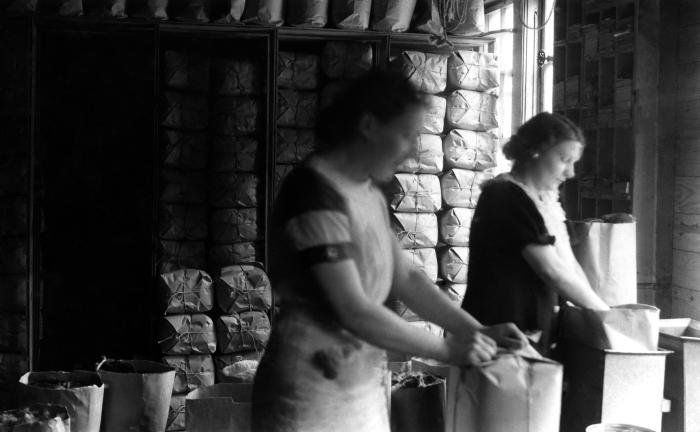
This historical image was provided by the Center for Disease Control's (CDC), National Institute for Occupational Safety and Health (NIOSH). Published in 1937, this photograph depicted two women in a Connecticut animal fur processing establishment who were placing processed fur into paper bags. Neither worker was wearing a filtered breathing mask, or any other protective accessories, including gloves.